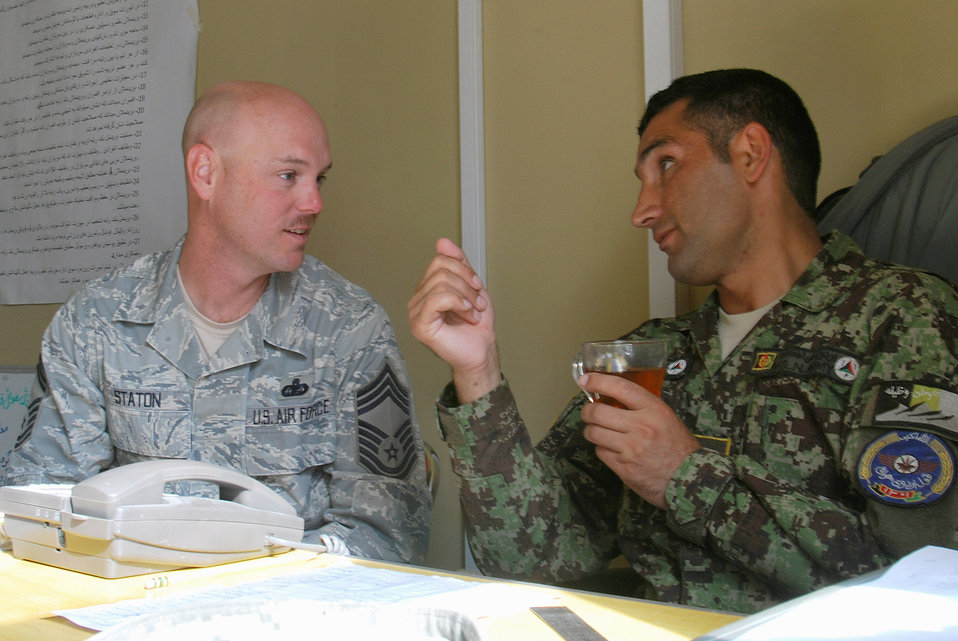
Mentoring Afghan Partners

Chief Master Sgt. Dave Staton and Afghan air force Command Sgt. Maj. Mohammad Hassan talk during a meeting Dec. 1, 2010, at Kandahar Airfield, Afghanistan. Chief Staton is the 738th Air Expeditionary Advisory Group superintendent. As the senior enlisted member, he is also the direct mentor to the Kandahar Air Wing’s enlisted leader, Sergeant Major Hassan.